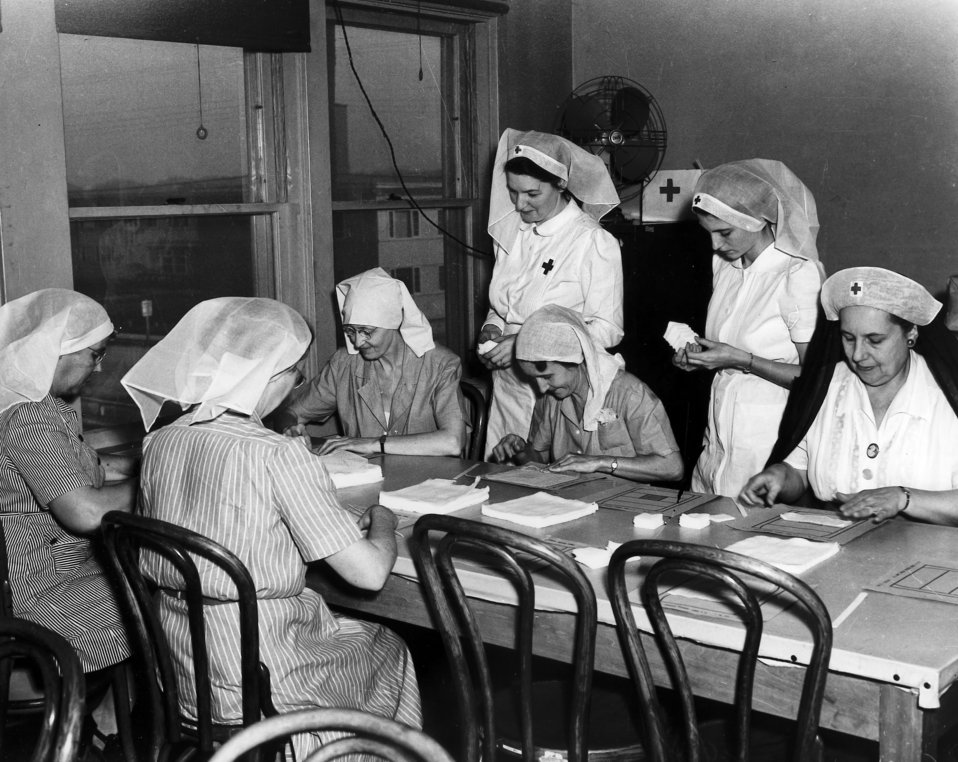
Red Cross Surgical Dressing Session Oak Ridge

Pro 155 DOE photo by Ed Wsetcott 11/30/44 Oak Ridge Tennessee